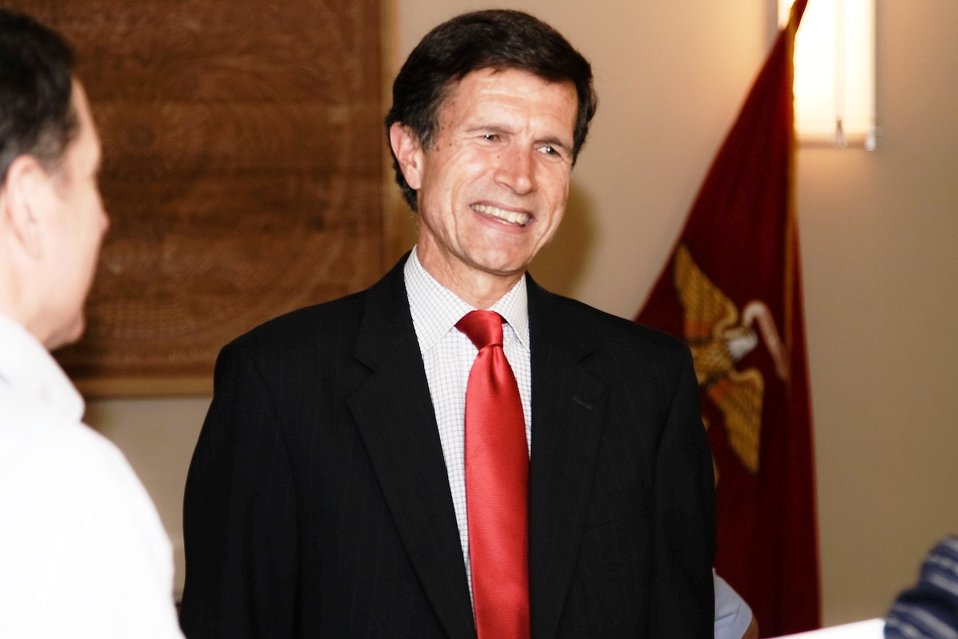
Assistant Secretary Blake Speaks With Tajiks

U.S. Assistant Secretary of State Robert O. Blake speaks with Tajiks during his visit to Dushanbe, Tajikistan, on August 31, 2010.